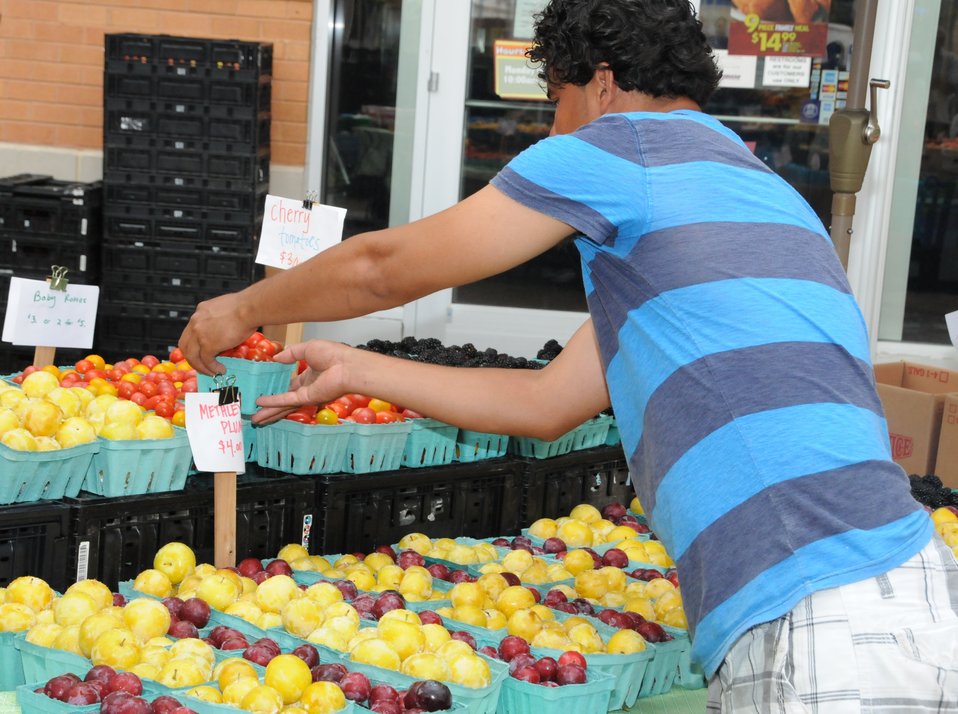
Setting up Produce Stand

Vendors set up their stands at the Columbia Heights Community Marketplace.